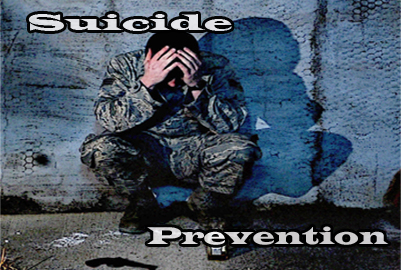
More focus needed to end suicides